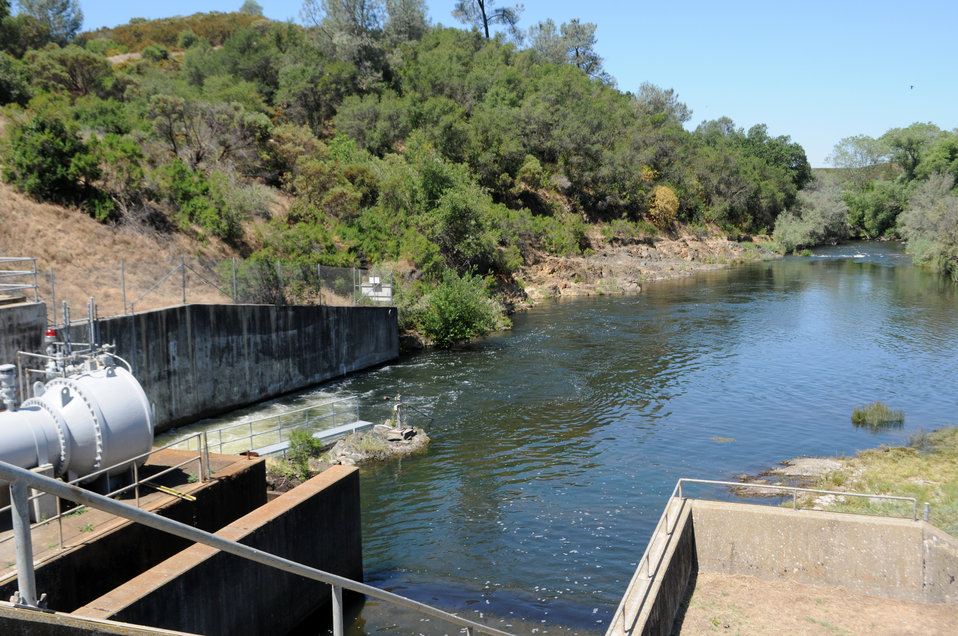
New Hogan Lake and Dam, Calaveras County, Calif.

A view of New Hogan Lake near Valley Springs, Calif., July 8. The 4,400 surface acre lake is located in the oak and brush-covered foothills of the Sierra Nevada Mountains and was created in 1964 with the completion of New Hogan Dam.

When full, the lake has 50 miles of shoreline and extends nearly eight miles upstream to the confluence of the north and south forks of the Calaveras River. The lake includes several campsites, boat ramps and other recreational activities open to the public.